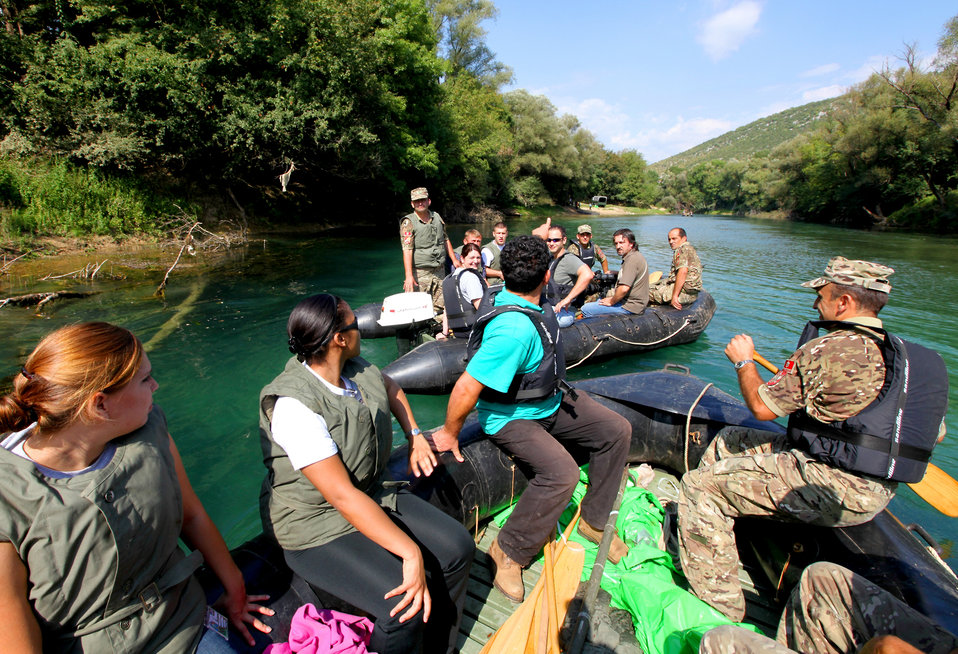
Joint exercise kicks off with community day

U.S. and Montenegrin forces prepare to gather fallen branches and stray garbage during a river clean up Sept. 8, 2010, outside Danilovgrad, Montenegro, as part of Medical Training Exercise in Central and Eastern Europe 2010. MEDCEUR 2010 brings together nine central and eastern European nations for a series of joint activities meant to improve medical mass casualty operation, planning and coordination skills.